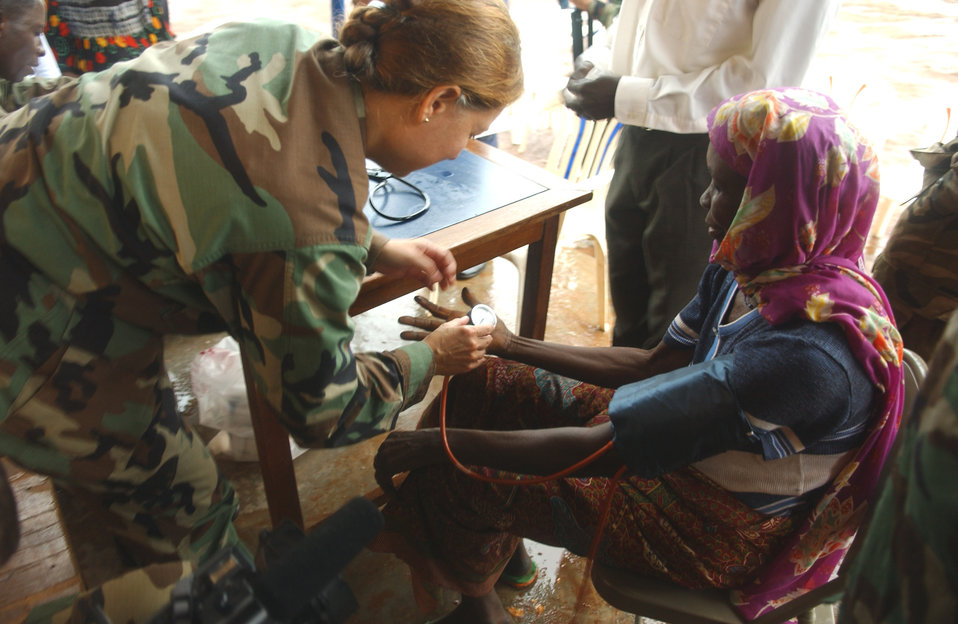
USAFE Airmen support Med Flag 2006 in Ghana

Maj. Elizabeth Shaw takes a woman's blood pressure at Tampion clinic at Med Flag 2006 in Tamale, Ghana, Sept. 12. More than 50 Airmen from United States Air Forces in Europe are participating in the humanitarian medical mission. Major Shaw is an education and training nurse with the 52nd Medical Group at Spangdahlem Air Base, Germany.